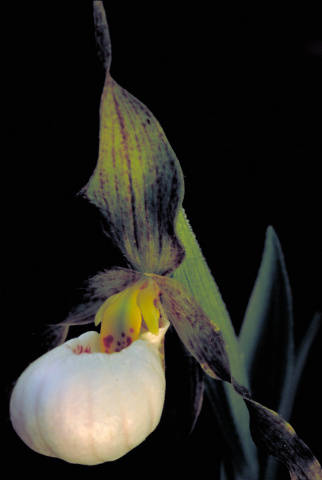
prairie ladies slipper